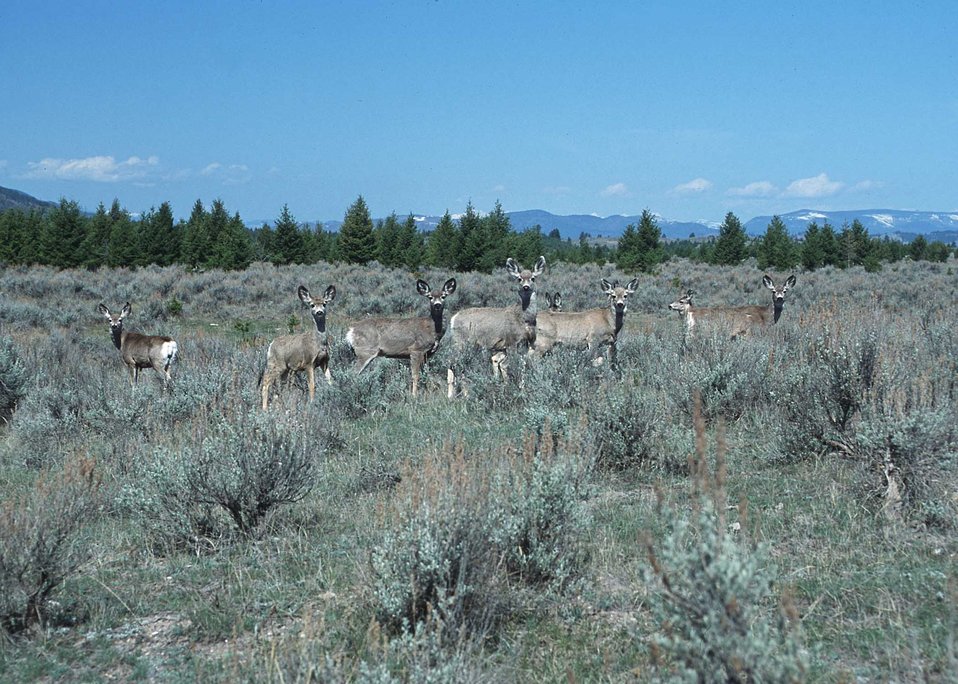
Deer utilizing rangelands in northcentral Montana.